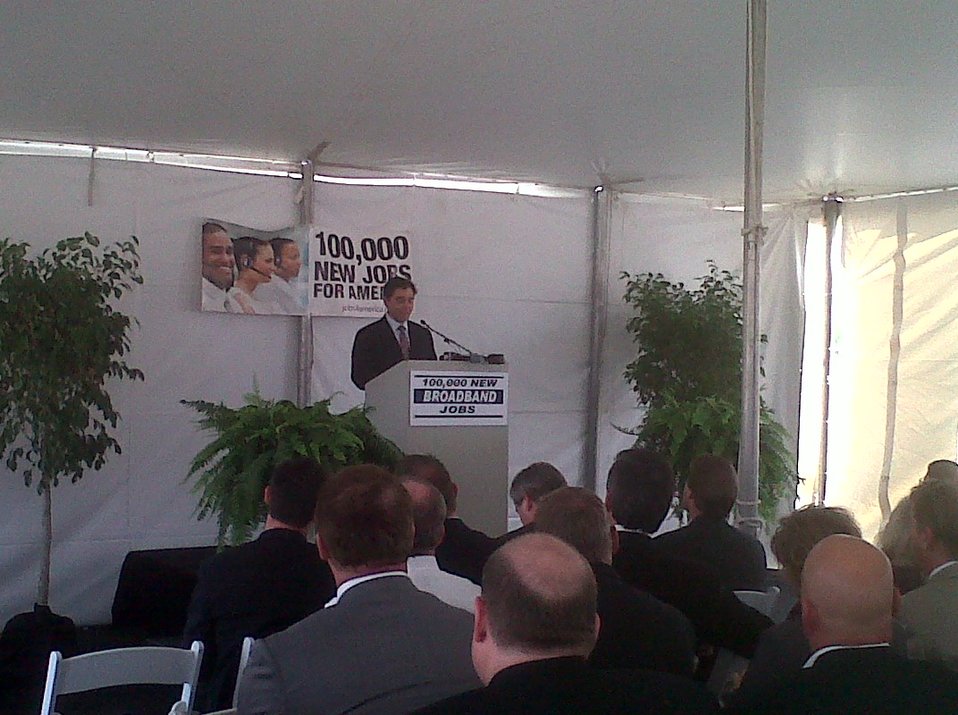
100,000 Broadband Jobs

Chairman Genachowski’s 8/4 announcement in Indiana of how broadband helped create 100,000 JobsforAmerica